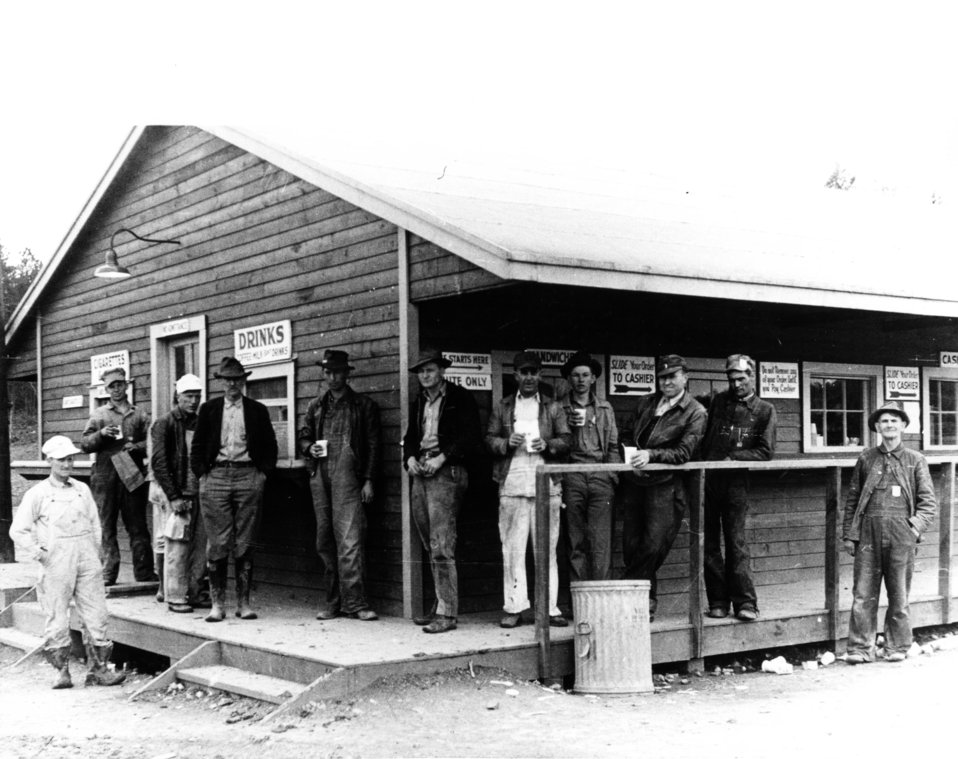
Daily Life at Oak Ridge